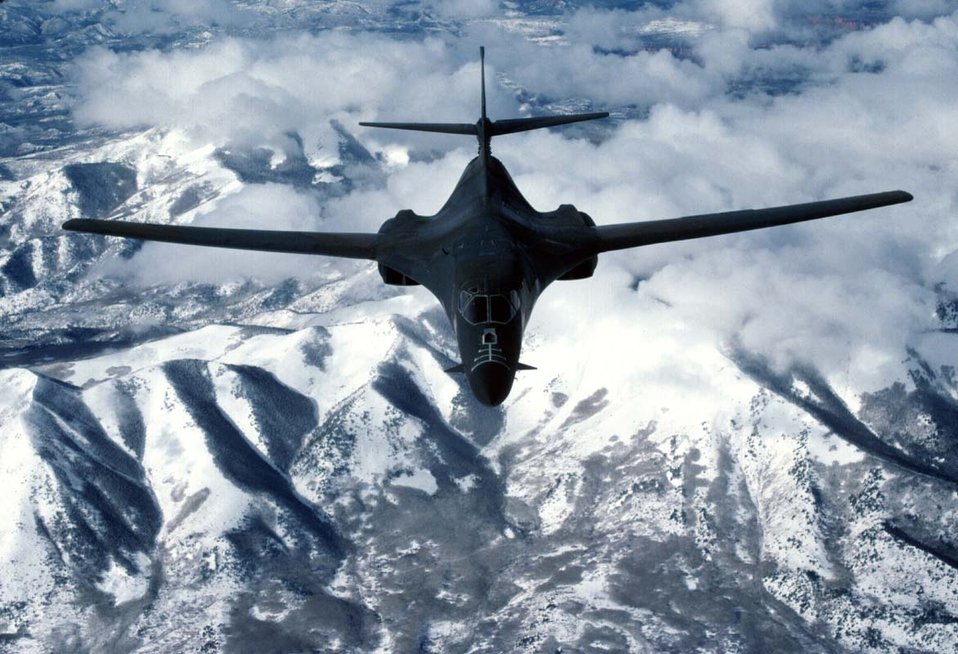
Lancer in flight

FILE PHOTO -- Carrying the largest payload of both guided and unguided weapons in the Air Force inventory, the multi-mission B-1 is the backbone of America's long-range bomber force. It can rapidly deliver massive quantities of precision and non-precision weapons against any adversary, anywhere in the world, at any time.